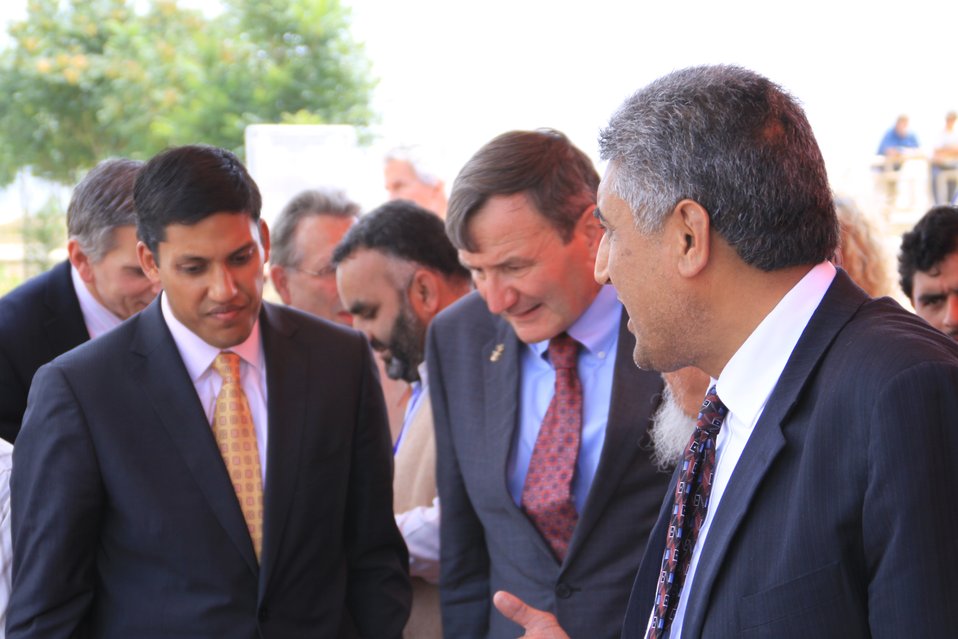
Badam Bagh Farm